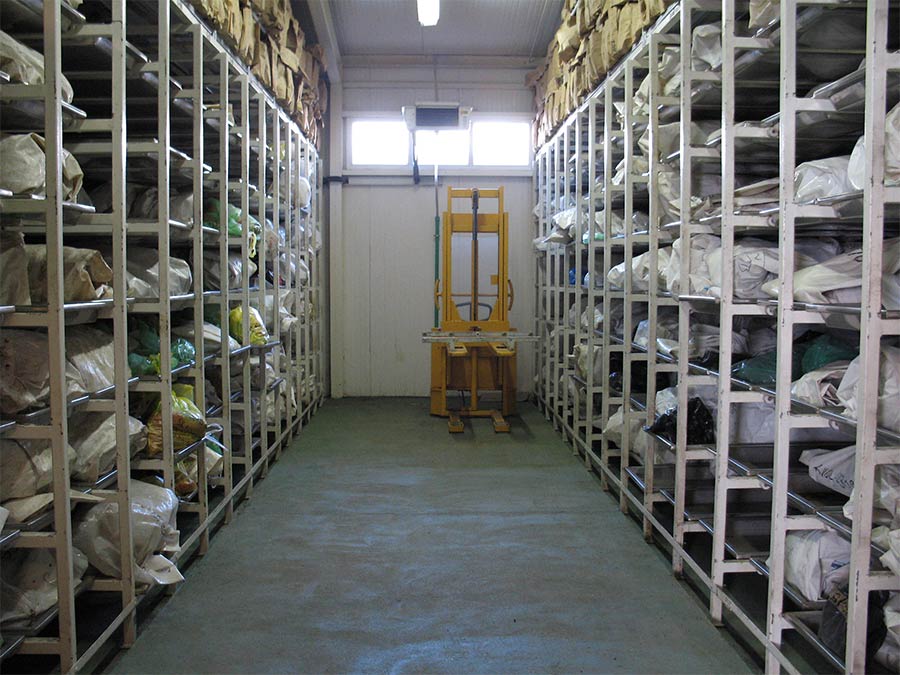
ICMP's Podrinje Identification Project (PIP) was formed to deal with the identification primarily of victims of 1995 Srebrenica massacre. PIP includes a facility for storing, processing, and handling exhumed remains. Much of the remains are only fragments or commingled body fragments since they were recovered from secondary mass graves. The photo depicts one section of the refrigerated mortuary.